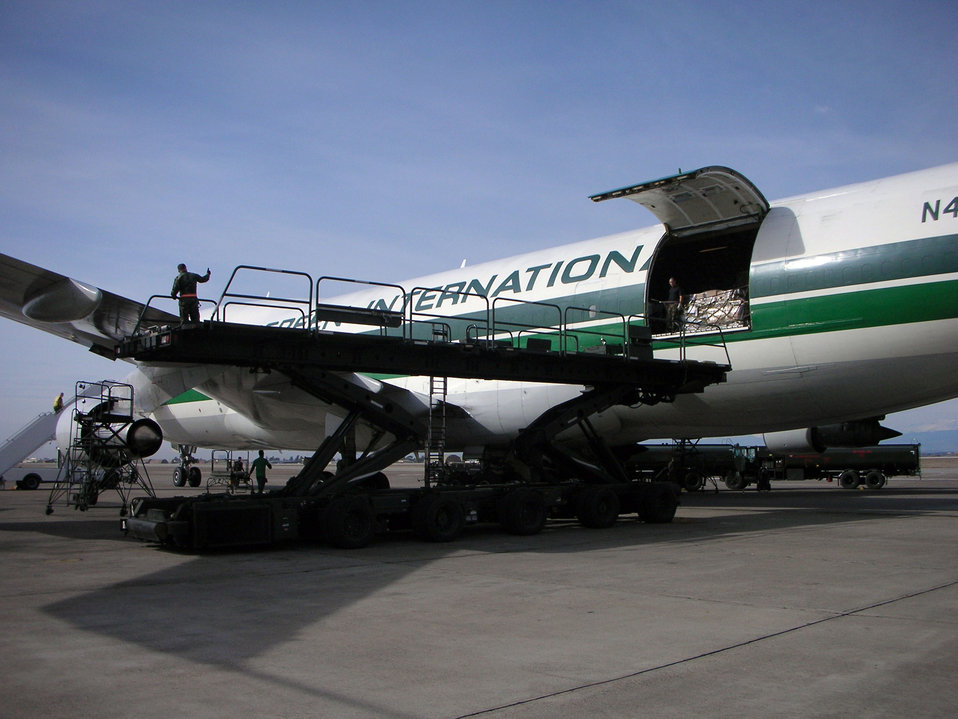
Cargo movers

INCIRLIK AIR BASE, Turkey (AFPN) -- A military-contracted 747 Jumbo Jet is unloaded by Incirlik's aerial porters of the 728th Air Mobility Squadron. With about 100 deployed reservists working around the clock, Incirlik Air Base is the main airlift hub for moving cargo into Iraq.